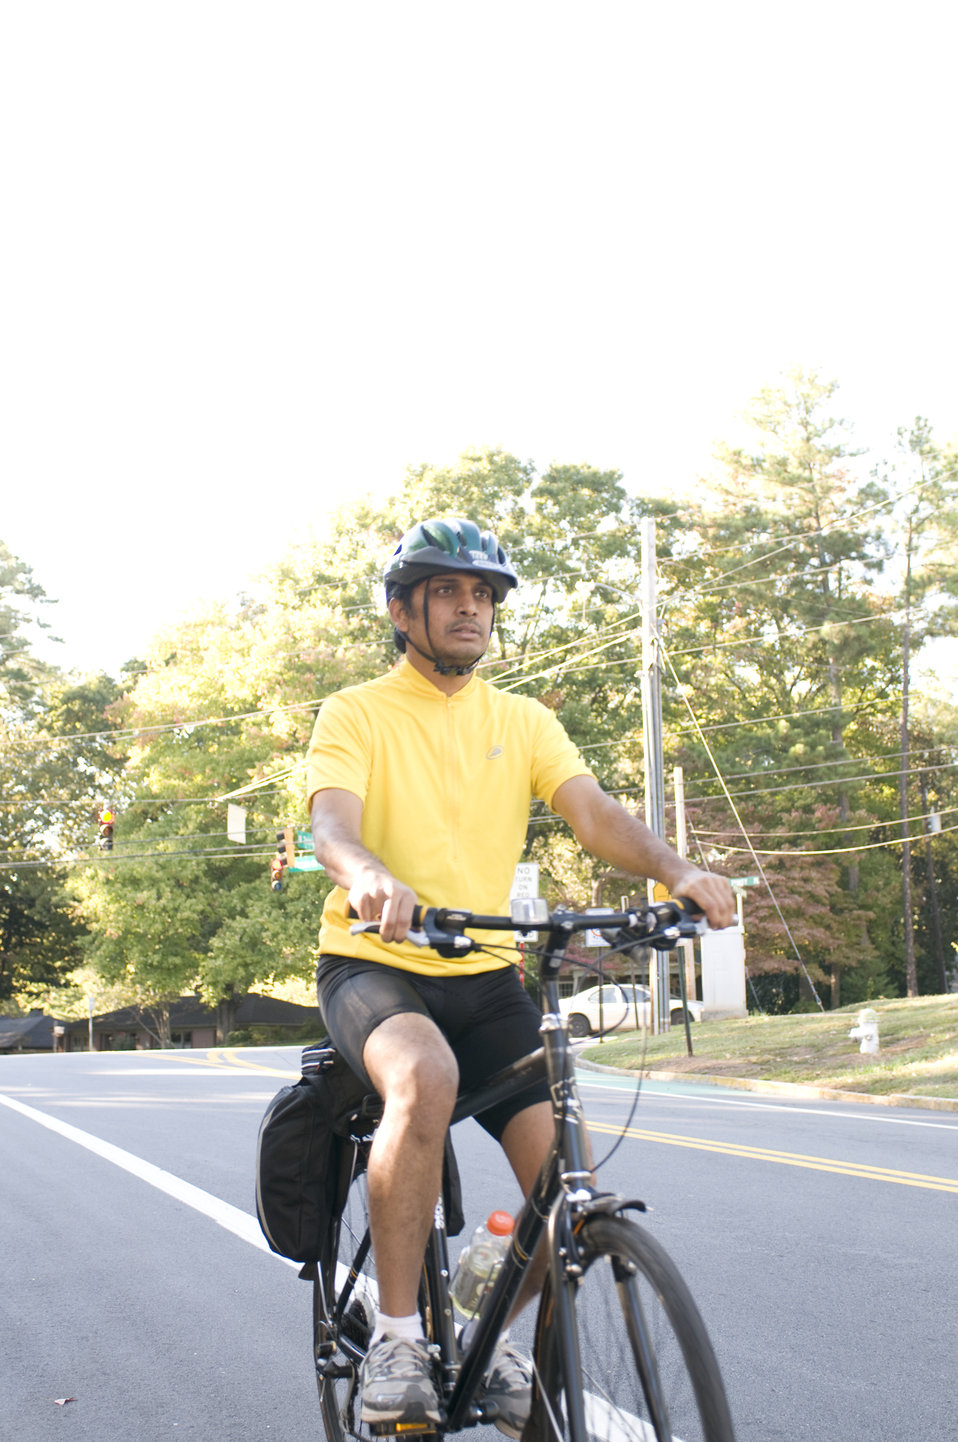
Photographed on a sunny Georgia day was a male bicyclist who had embarked on a morning bicycle ride. Note the brightly-colored shirt he was wearing, which would help drivers see him more easily, as well as the protective, aerodynamic helmet, and the snug leggings, all adding to an overall safer bike ride. Also important, is that he was riding in the designated bicycle traffic lane, and abiding by the proper rules of the road, which govern drivers of both bicycles, and motorized vehicles.